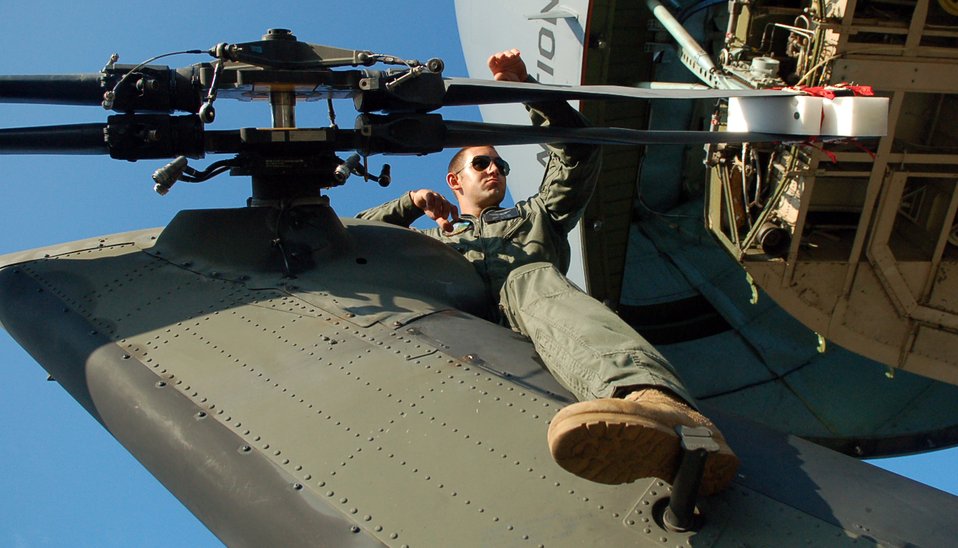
Medical mission becomes primary focus following Noel

Army Spc. James Bilton rides the tail of an Army UH-60 Blackhawk helicopter to ensure it is safely removed from an C-5 Galaxy aircraft at San Isidro Air Base, Dominican Republic, in preparation for medical relief missions. Servicemembers are deployed from Joint Task Force-Bravo at Soto Cano Air Base, Honduras, to assist the Dominican Republic after it was ravaged by Tropical Storm Noel. Specialist Bilton is with the 1st Battalion, 228th Aviation Regimen.